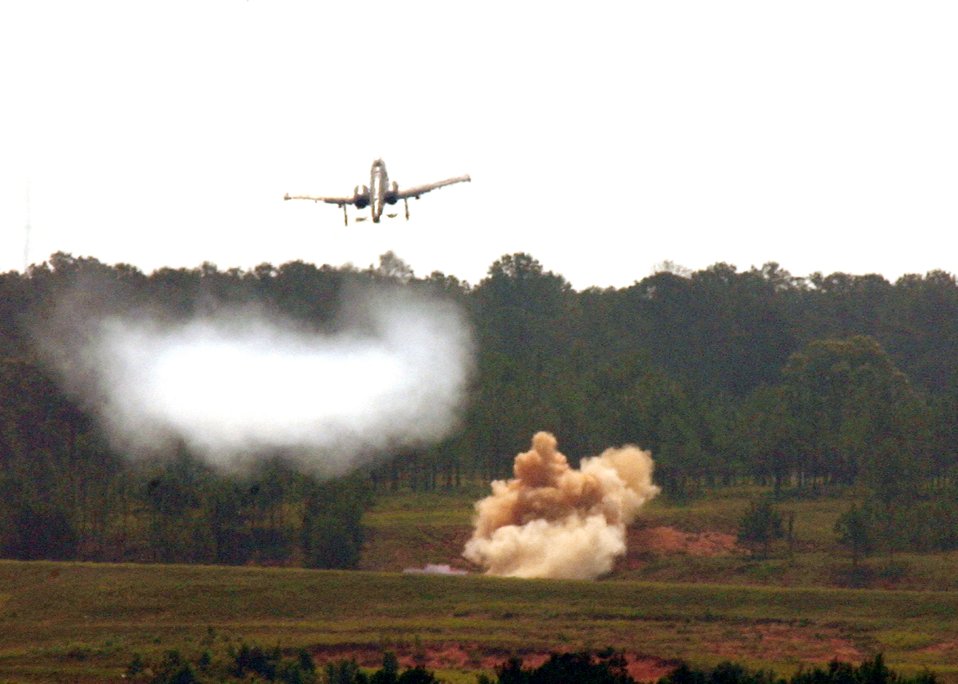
Air Warrior II tests aircrews and controllers

FORT POLK, La. -- An A-10 Thunderbolt II pulls up after destroying a ground target with its 30 mm Gatling gun during a live-fire portion of Air Warrior II here. Airmen of the 354th Fighter Squadron from Davis-Monthan Air Force Base, Ariz., are participating in the exercise along with Air Force joint terminal attack controllers embedded with the Army's 10th Mountain Division.